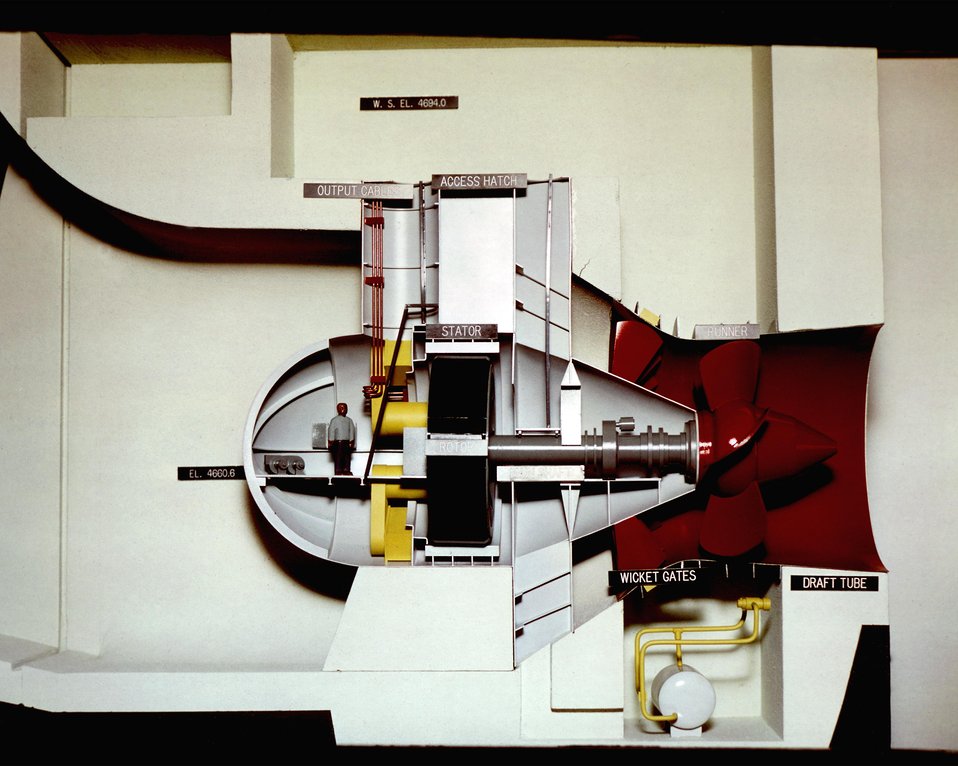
CUTAWAY MODEL OF THE TYPE OF BULB TURBINE THAT WILL BE USED AT IDAHO FALLS.

THE DEMONSTRATION PROJECT AT IDAHO FALLS CONSISTS OF REDEVELOPING THE CITY'S THREE EXISTING POWER PLANT SITES. THESE THREE SITES, ALONG THE SNAKE RIVER, ARE GOING TO CONTAIN LOW-HEAD HYDROELECTRIC PLANTS. A 7.2 MWE BULB TURBINE-GENERATOR WILL BE INSTALLED ON EACH SITE. ONE SITE WILL ALSO MAINTAIN TWO EXISTING 1.875 MWE UNITS AS STANDBY OR PEAK FLOW UNITS. PRIOR TO THIS PROJECT, BULB TURBINES HAD ONLY BEEN USED FOR HIGH POWER GENERATION. THIS PROJECT IS GOING TO DEMONSTRATE THAT BULB TURBINES CAN BE USED ECONOMICALLY FOR SMALL-SCALE, LOW-HEAD HYDROELECTRIC POWER GENERATION. THE PROJECT IS ALSO GOING TO DEMONSTRATE THAT THIS TECHNOLOGY CAN BE USED IMMEDIATELY, IT DOES NOT NEED EXTENSIVE RESEARCH AND DEVELOPMENT.